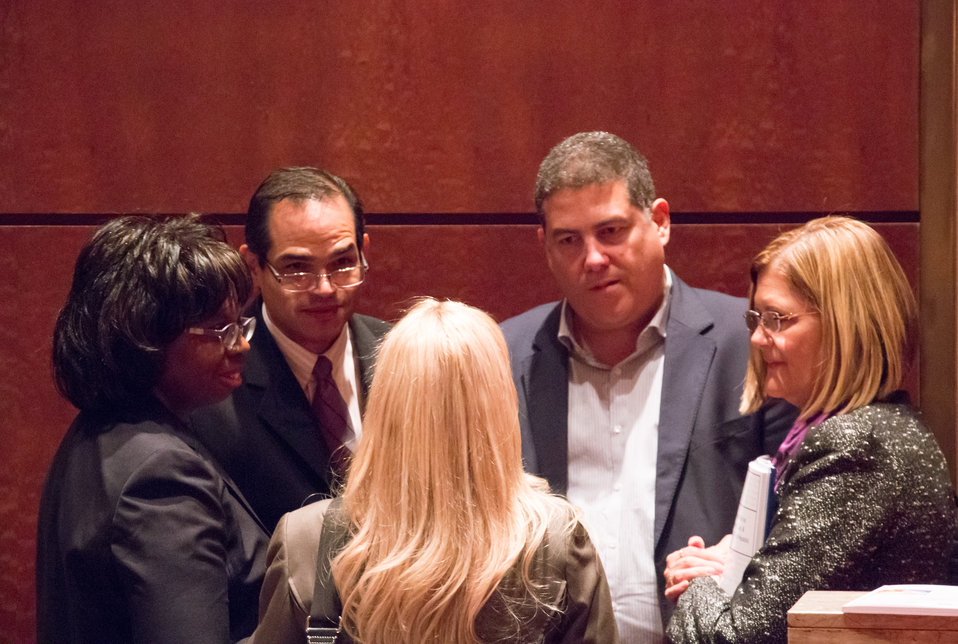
VHAP Launch (457 of 511)